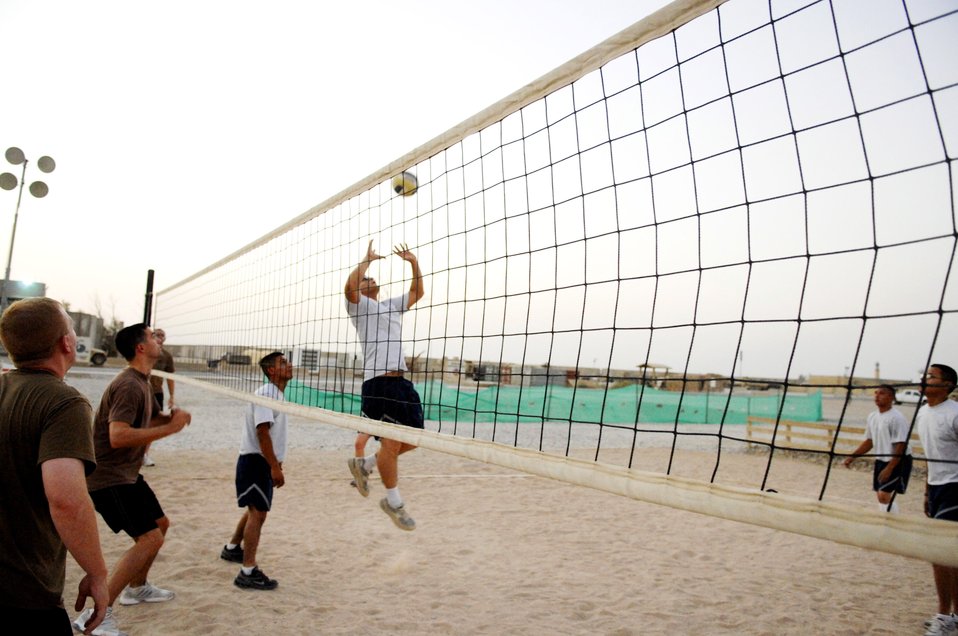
Coalition forces compete at Ali Base

A member of the 407th Air Expeditionary Group volleyball team sets the ball in a match against the Navy team during the first-ever coalition games Aug. 23 at Camp Adder, Iraq. The Air Force team took first place in the event. The coalition games brought together different sport teams from the Air Force, Army, Navy, Australians and the Romanians to compete for the bragging rights as the best on base. The Air Force came out on top taking first place in five events.